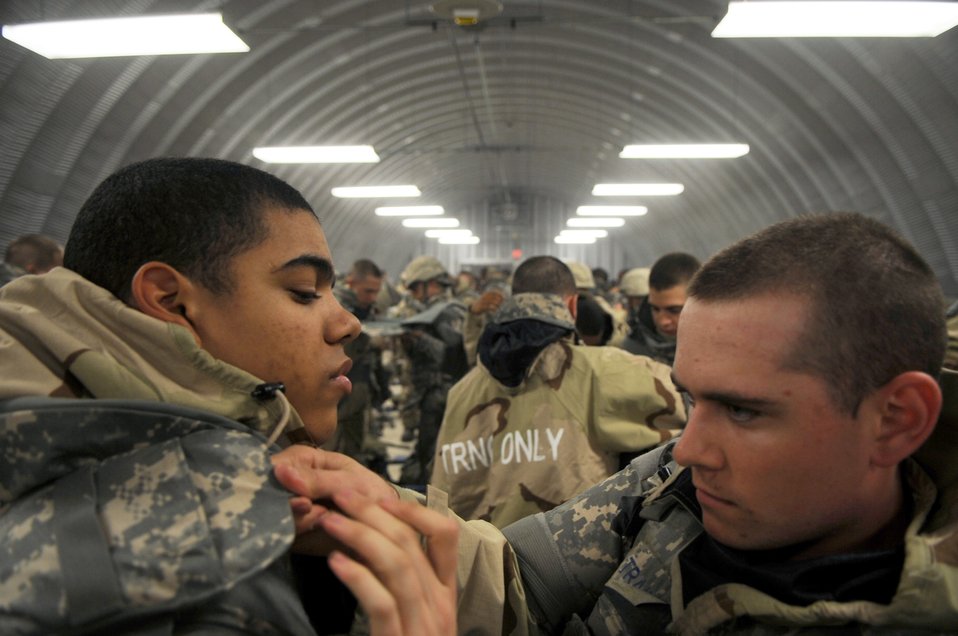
Trainees slew the BEAST in new basic training program

Airmen Basic trainees inspect each others body armor during the five-day deployment exercise called the Basic Expeditionary Airman Skills and Training, or BEAST, which kicked off Dec. 15 at Lackland Air Force Base, Texas. The BEAST is the newly built complex added into the extended, 8.5-week Basic Military Training curriculum that began Nov. 5.